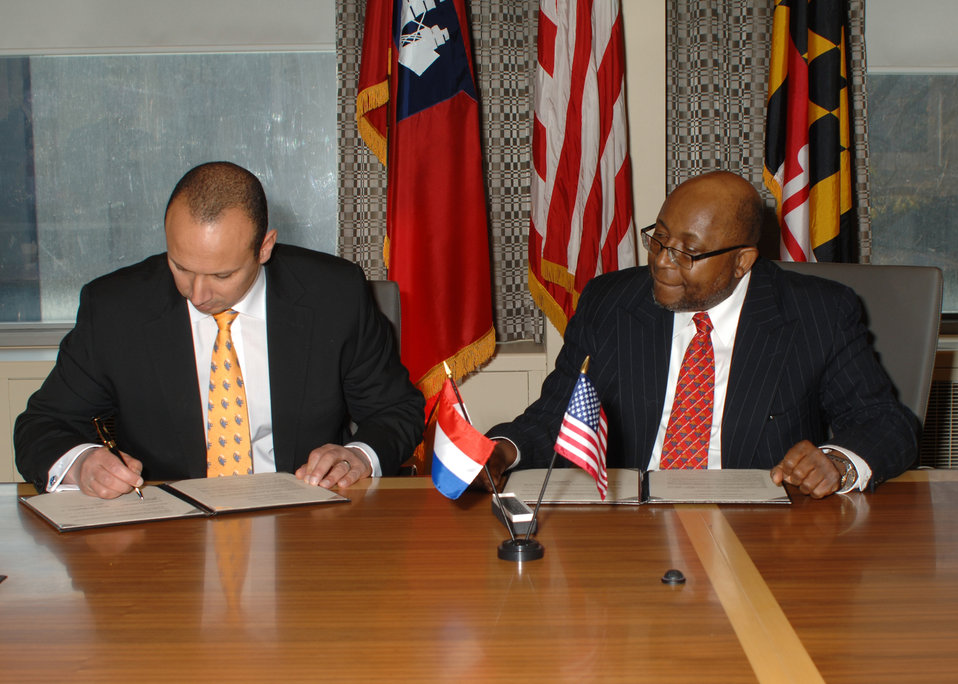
MOU with Netherlands Forensic Institute

NIST Associate Director for Laboratory Programs Willie May watches as Tjark Tjin-A-Tsoi, Chief Executive Officer of the Netherlands Forensic Institute, signs an agreement for the two organizations to collaborate for the advancement of forensic science. The signing took place during the Forensics@NIST 2012 symposium on Nov. 29, 2012, at NIST?s Gaithersburg, Md., headquarters.